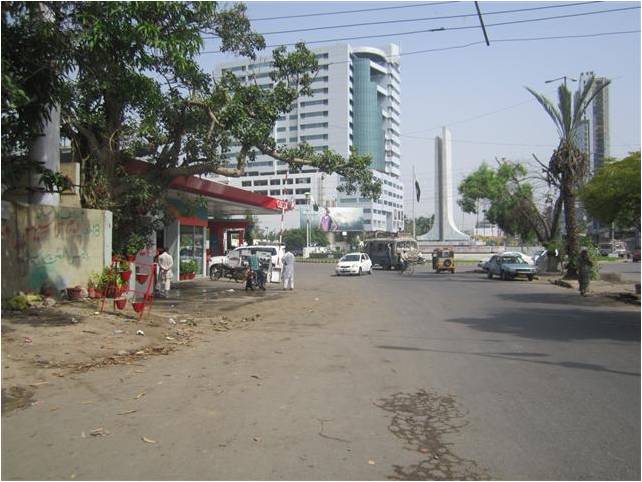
The pump is located in the Clifton neighborhood in Karachi